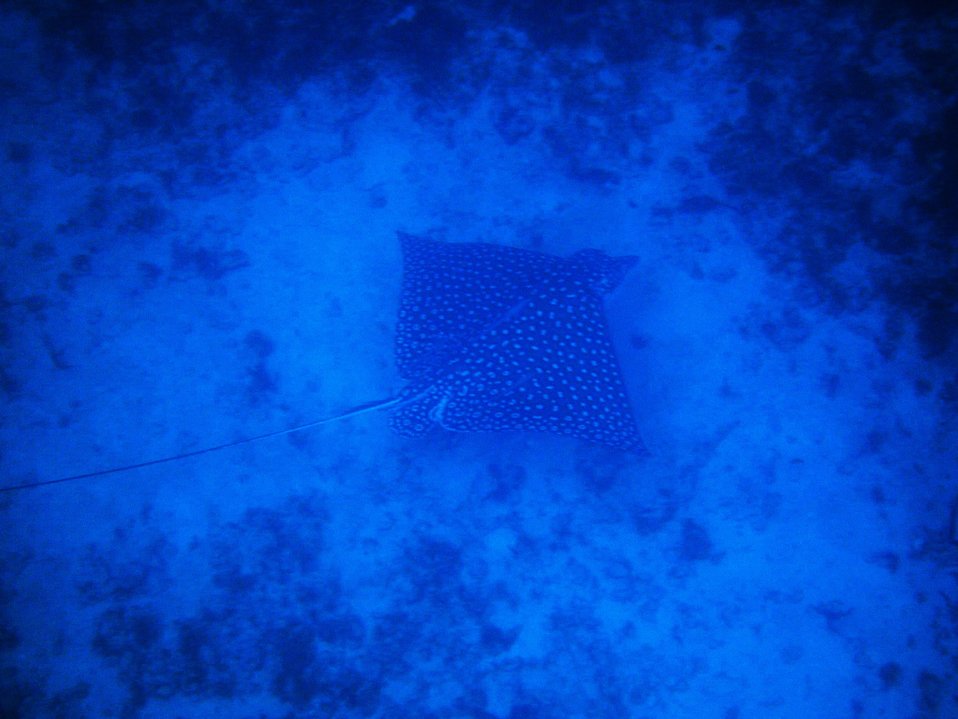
Spotted eagle ray (Aetobatus narinari)